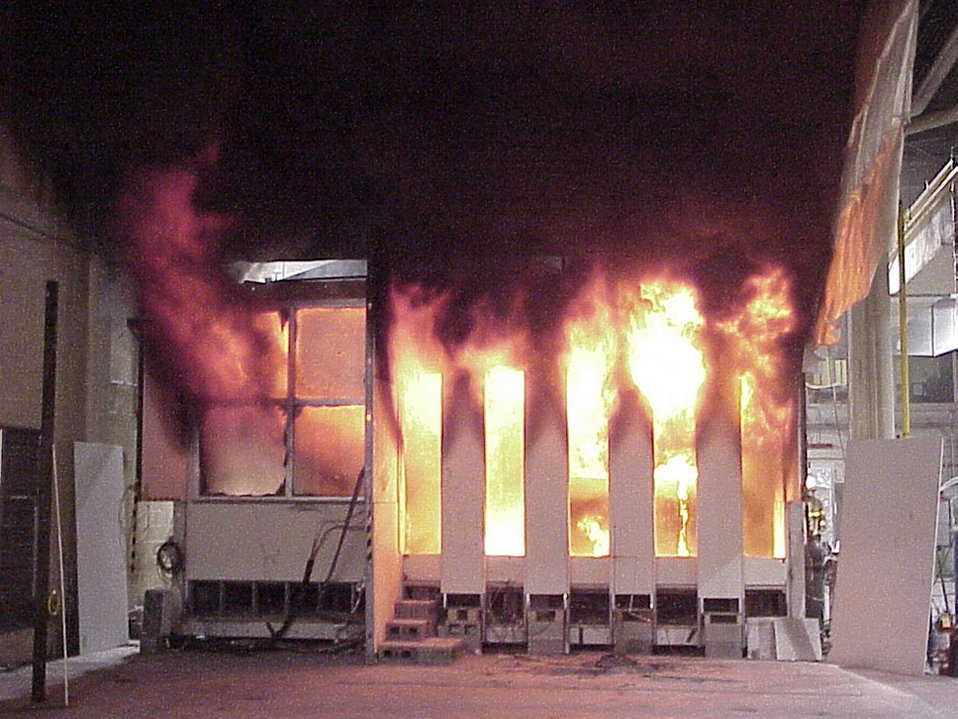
Fire test; World Trade Center

NIST experiment to replicate an office fire in the World Trade Center. Tests such as this helped validate computer models of the spread rate and intensity of the fires initiated by jet fuel and fed by the office furnishings and other combustibles. Video shows fire test of mockup WTC office environment with multiple workstations from two camera angles.